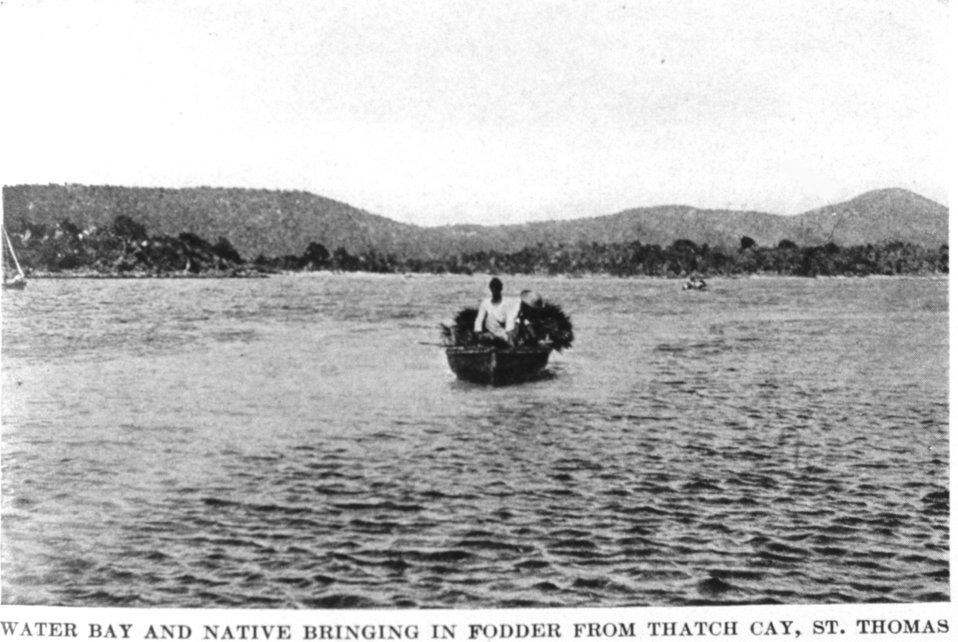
'Water Bay and Native Bringing in Fodder from Thatch Cay, St. Thomas.' In: 'The Virgin Islands Our New Possessions and the British Islands', by Theodoor De Booy and John T. Faris, 1918. J. B. Lippincott and Company, Philadelphia. P. 40. Library Call Number C/hc100 V81 B.